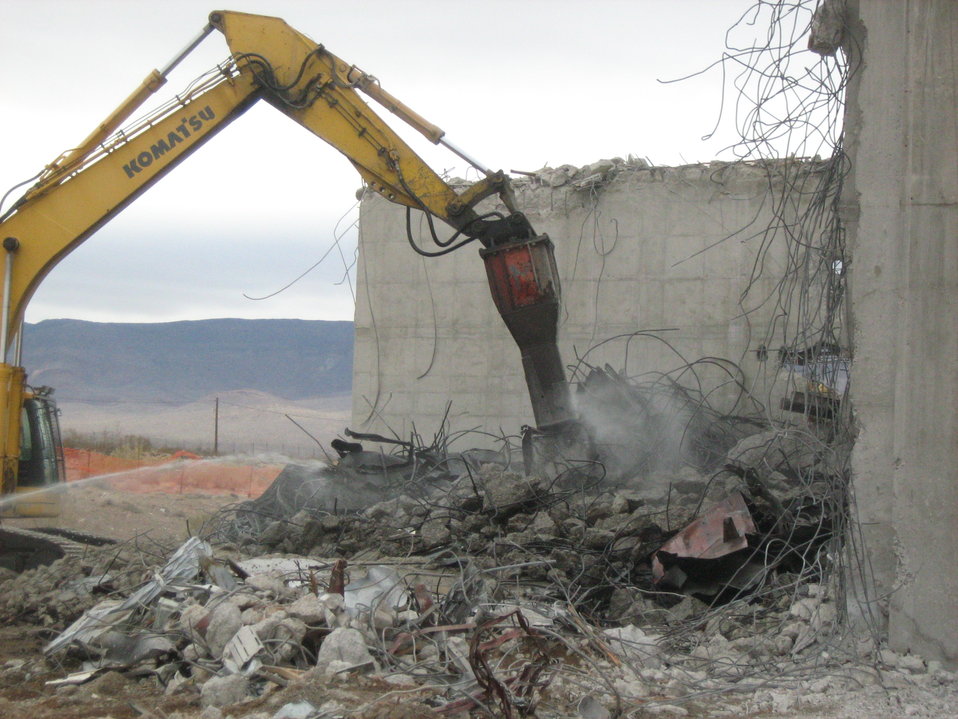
Nevada Recovery Act work

The Nevada Site Office identified the demolition of the Reactor Maintenance, Assembly, and Disassembly Facility as a top Recovery Act accomplishment at NNSS in 2010.